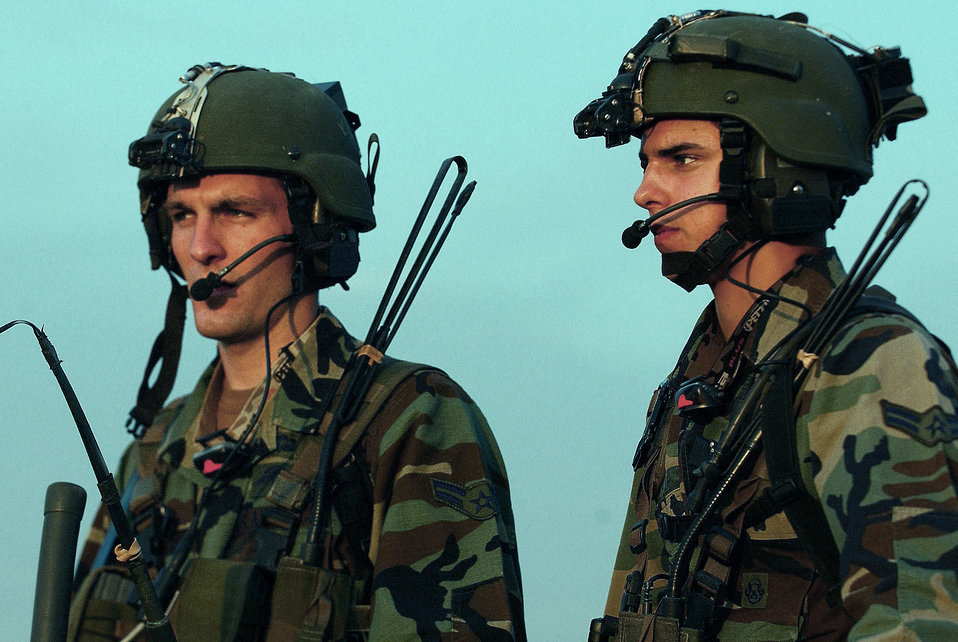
Combat controllers

FORT BRAGG, N.C. -- Combat controllers from the 21st Special Tactics Squadron look on as a C-17 Globemaster III makes a pass over a drop zone as part of Large Package Week here May 11. Large Package Week is a joint Army and Air Force airdrop exercise designed to enhance service cohesiveness.